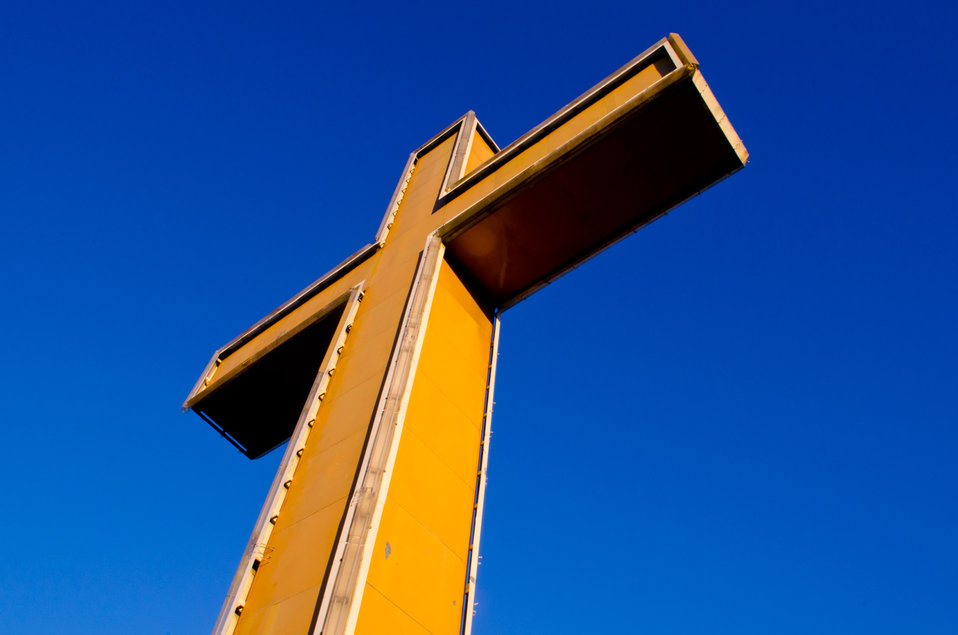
Park of the cross

Parque da cruz - santa cruz do sul.